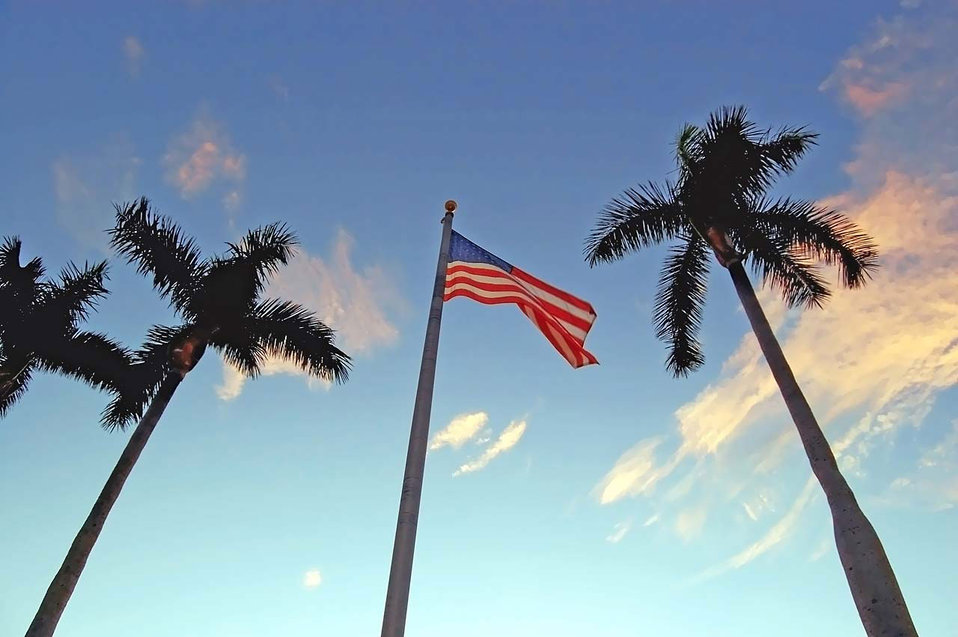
Three palms and flag

Flag in the sky betwin palms.